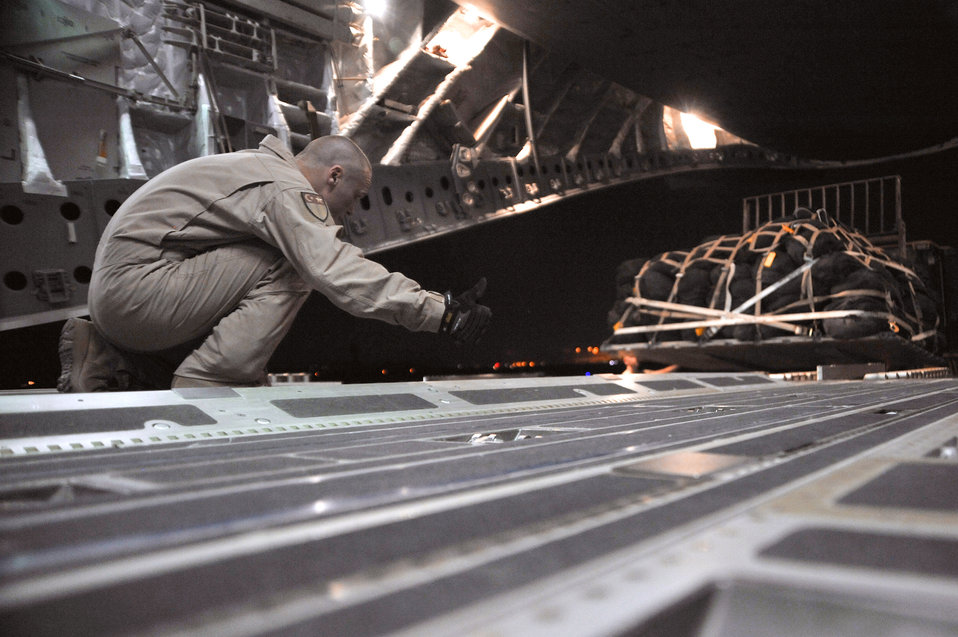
Teamwork keeps Sather Air Base's passenger terminal moving

A C-17 Globemaster III loadmaster gives the thumbs up to 447th Expeditionary Logistics Readiness Squadron aerial porters while loading palletized baggage Aug. 6, 2010, at Sather Air Base, Iraq.